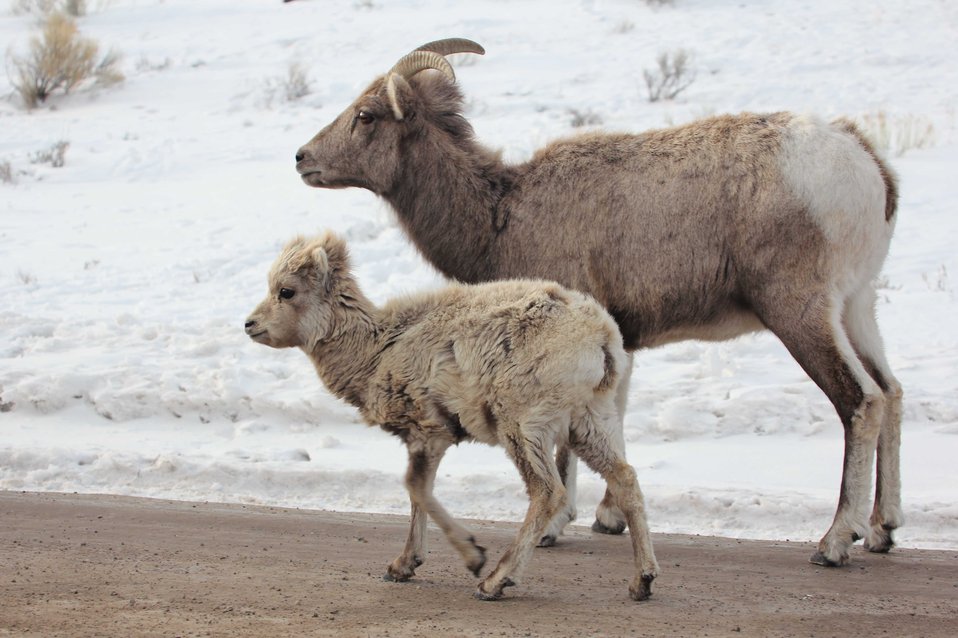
A Family Affair

A bighorn sheep ewe walks down the Refuge Road alongside her lamb.

Credit: USFWS / Ann Hough, National Elk Refuge volunteer